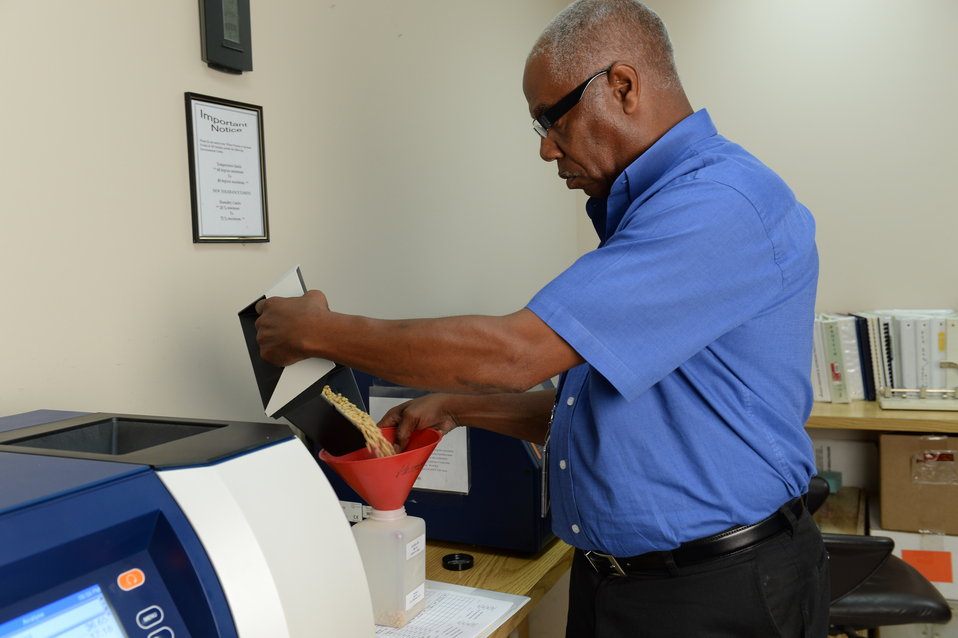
U.S. Department of Agriculture (USDA) Grain Inspection, Packers and Stockyards Administration (GIPSA) Federal Grain Inspection Service (FGIS) employee tests soybean samples at the FGIS inspection laboratory in New Orleans, LA on Monday, Nov. 18, 2013.